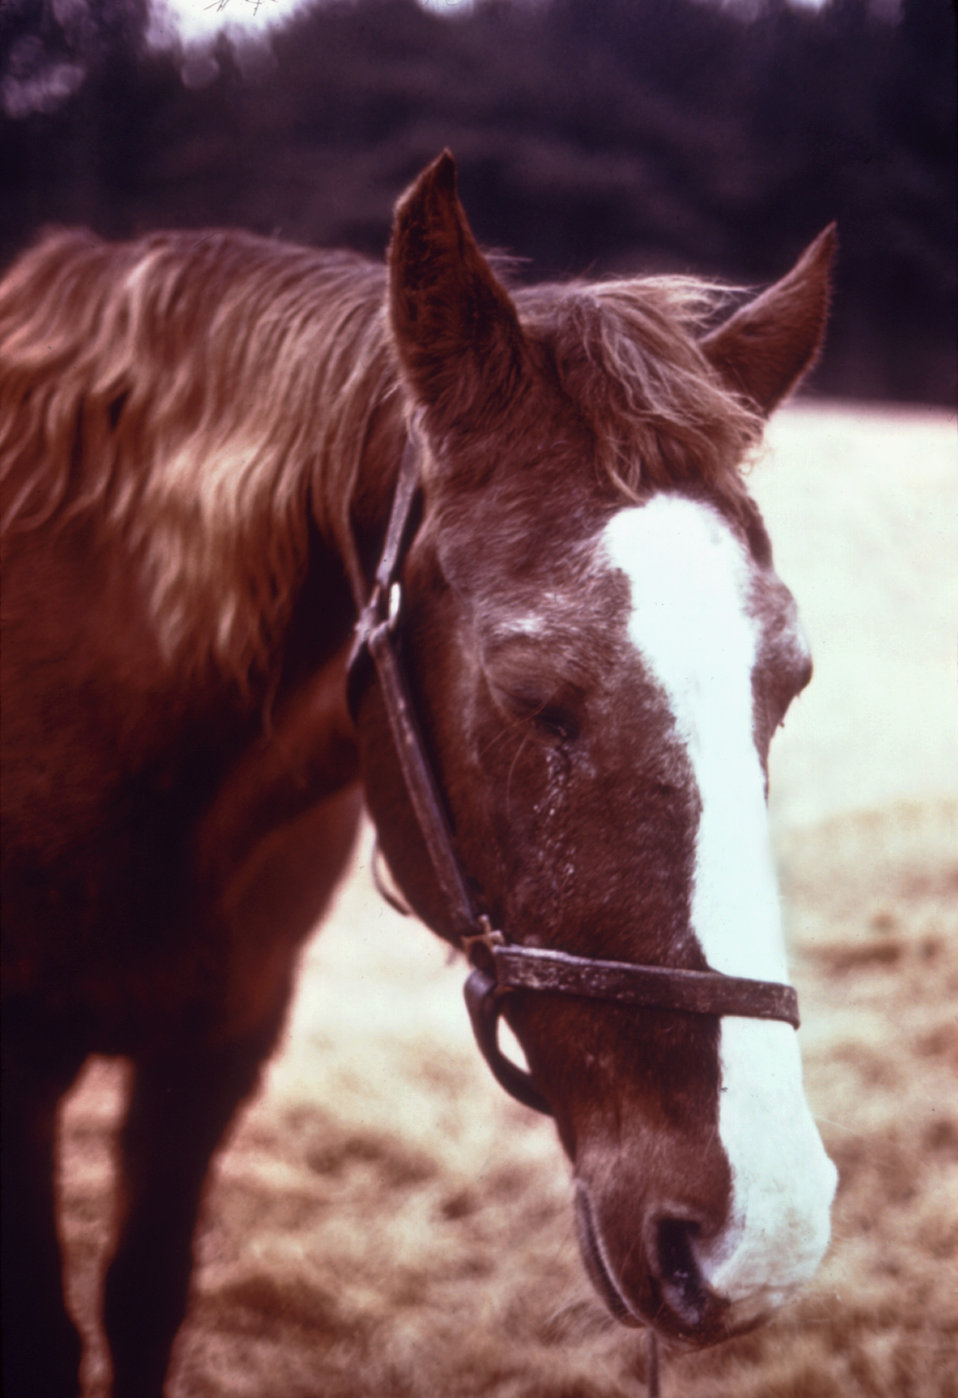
This horse was displaying symptoms of the arboviral disease Venezuelan equine encephalitis (VEE).